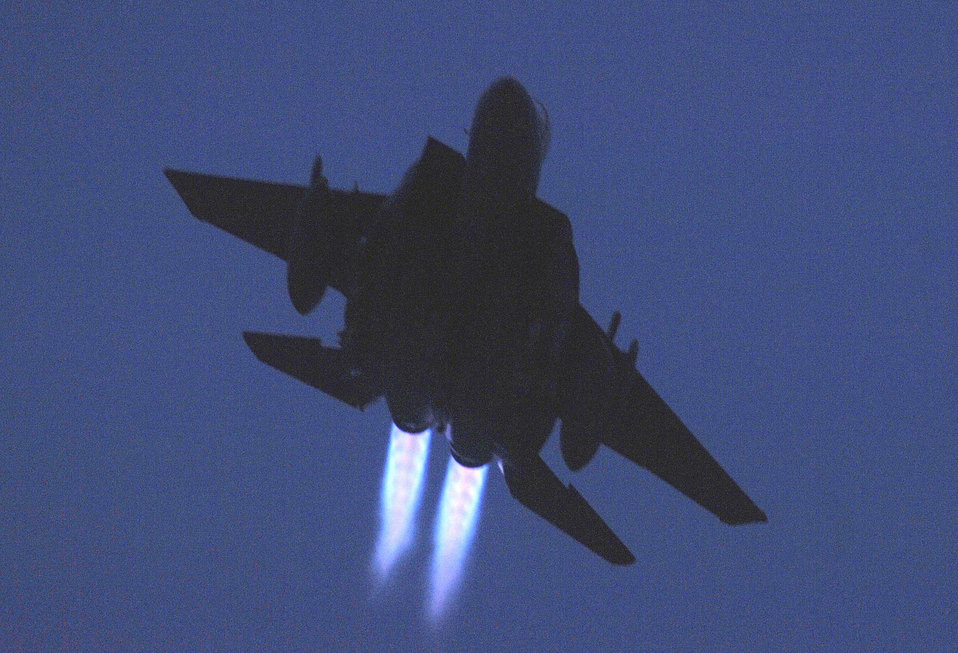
airpower summary

An F-15E Strike Eagle assigned to the 492nd Expeditionary Fighter Squadron takes off from Bagram Airfield, Afghanistan. F-15Es flew major strike engagements over Bari Kowt in Afghanistan supporting Operation Enduring Freedom July 27.